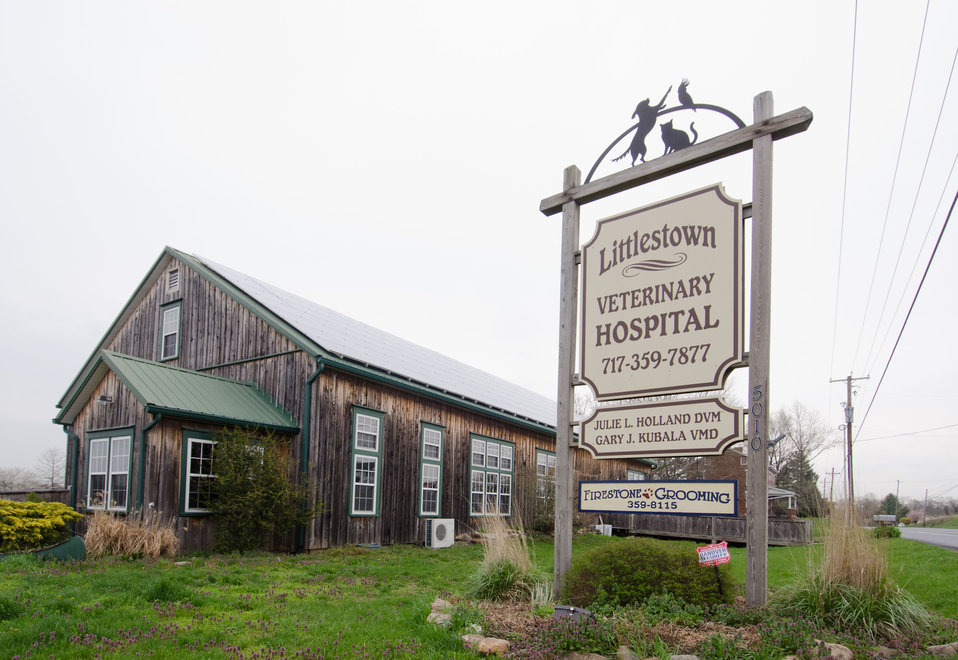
105 solar panels are installed at Littlestown Veterinary Hospital in Littlestown, PA, in mid September 2010. The Littlestown Veterinary Hospital in Littlestown, PA, received a grant from the U. S. Department of Agriculture, Rural Development under the Rural Energy for America Program (REAP) to have solar panels installed to help reduce their carbon footprint and to have cost effective electric power for the hospital. REAP provides grants for energy audits and renewable energy development assistance. The program also provides funds to agricultural producers and rural small business to purchase and install renewable energy systems and make energy efficiency improvements. The expected cost savings using solar power for the hospital’s electrical needs is expected to reduce the facility’s operating expenses by 30%-40%.